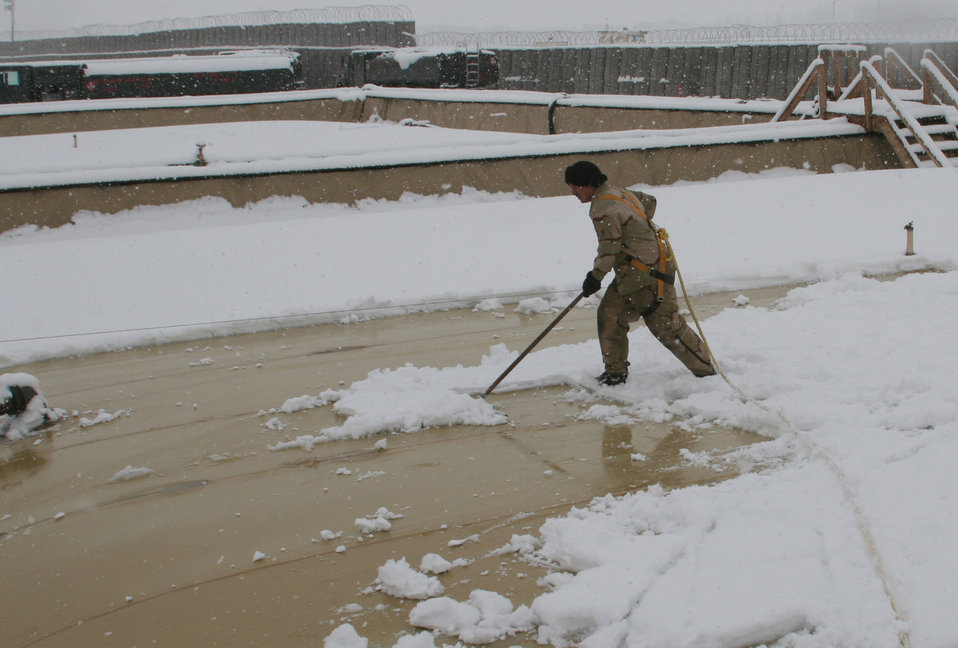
Oh snowy day

MANAS AIR BASE, Kyrgyzstan -- Staff Sgt. James Mork removes quickly accumulating snow from a fuel bladder vital to the aerial refueling mission here. The base received five inches of snow in two days. Airmen here were not fazed; they launched more than 22 sorties, handling more than 1,500 passengers. Sergeant Mork is assigned to the 376th Expeditionary Logistics Readiness Squadron.